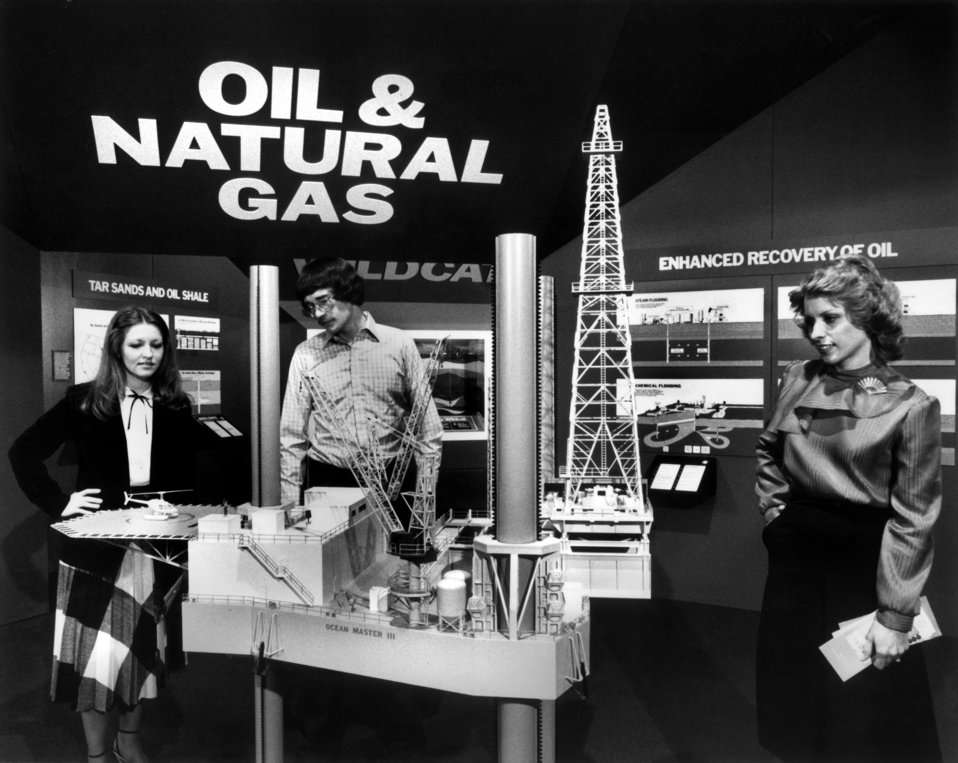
Oil and Natural Gas Exhibit at American Museum of Science and Energy Oak Ridge

82-11 DOE photo by Frank Hoffman

Oil and Natural Gas Exhibit at American Museum of Science and Energy Oak Ridge Tennessee 1-26-1982